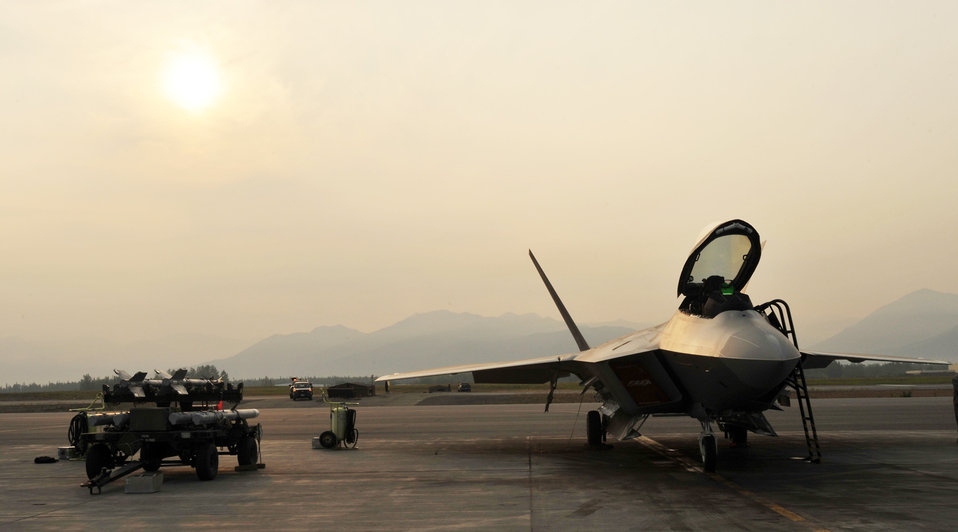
Alaskan load crews compete

During a load crew competition, the sun beams down through the smoky haze on an F-22 Raptor July 10 on the Elmendorf Air Force Base, Alaska, flightline. The haze is caused by more than 70 Alaska wildfires across the state.